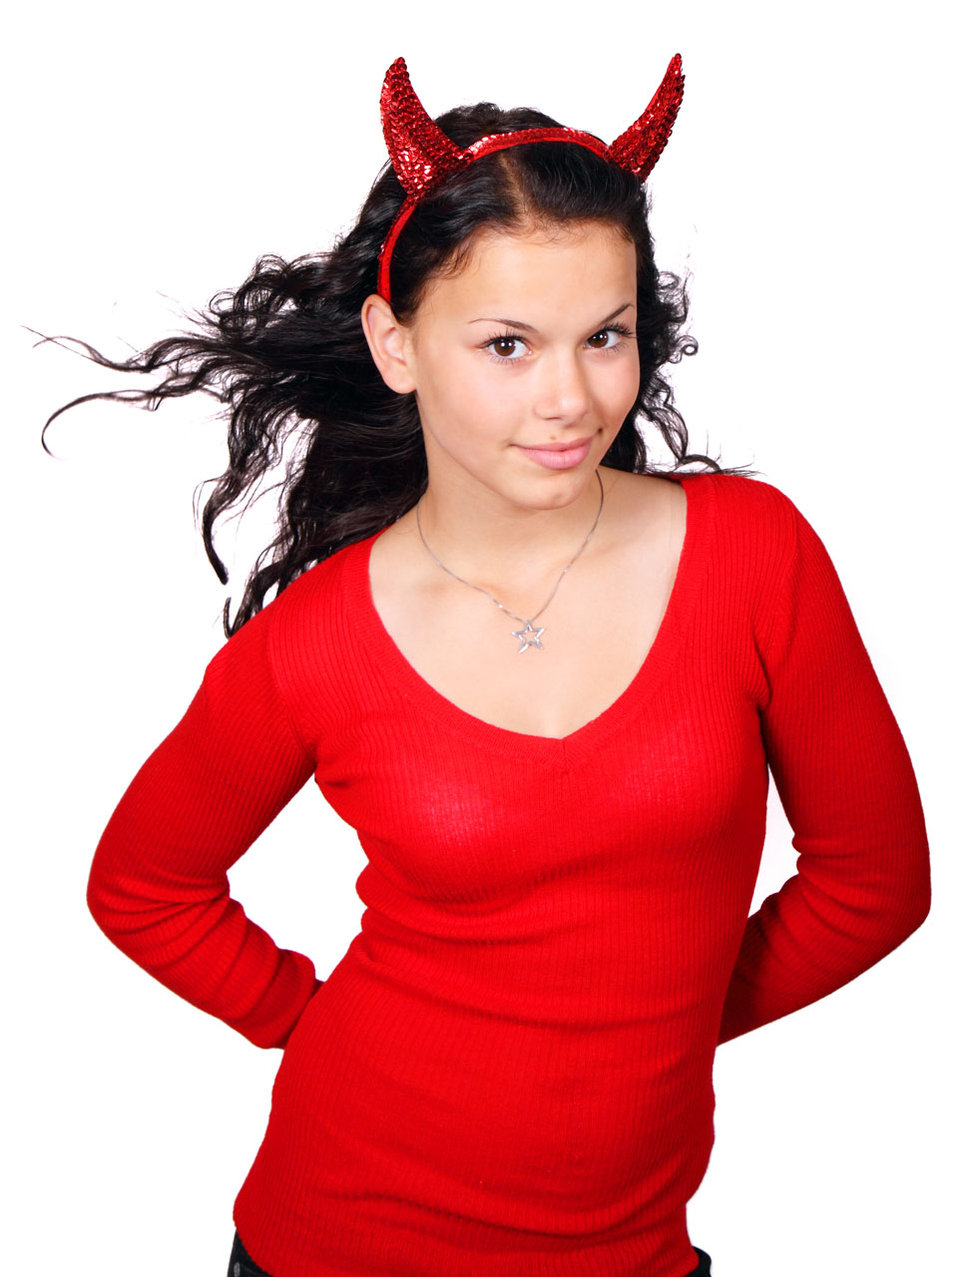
Female devil

Cute red devil.